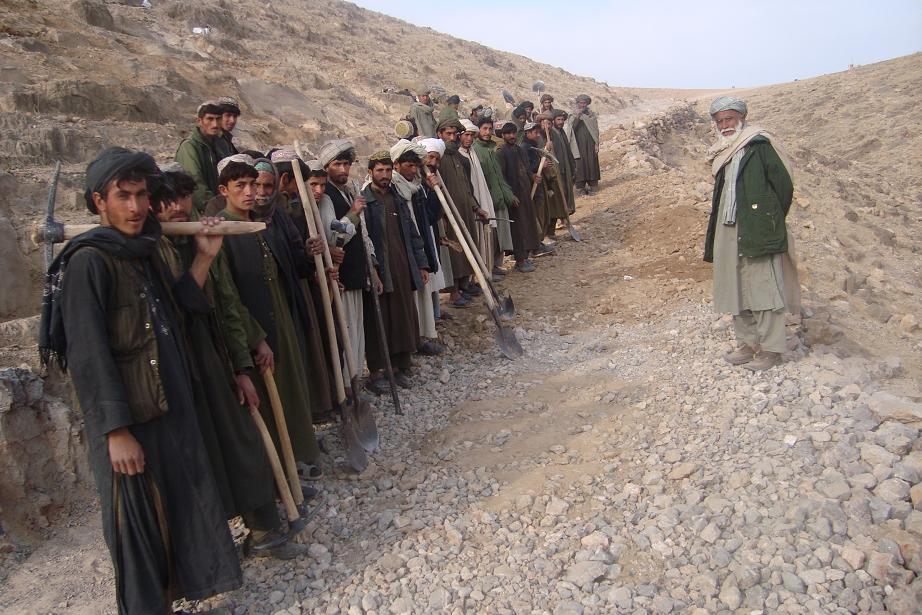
Workforce Posing for Photo